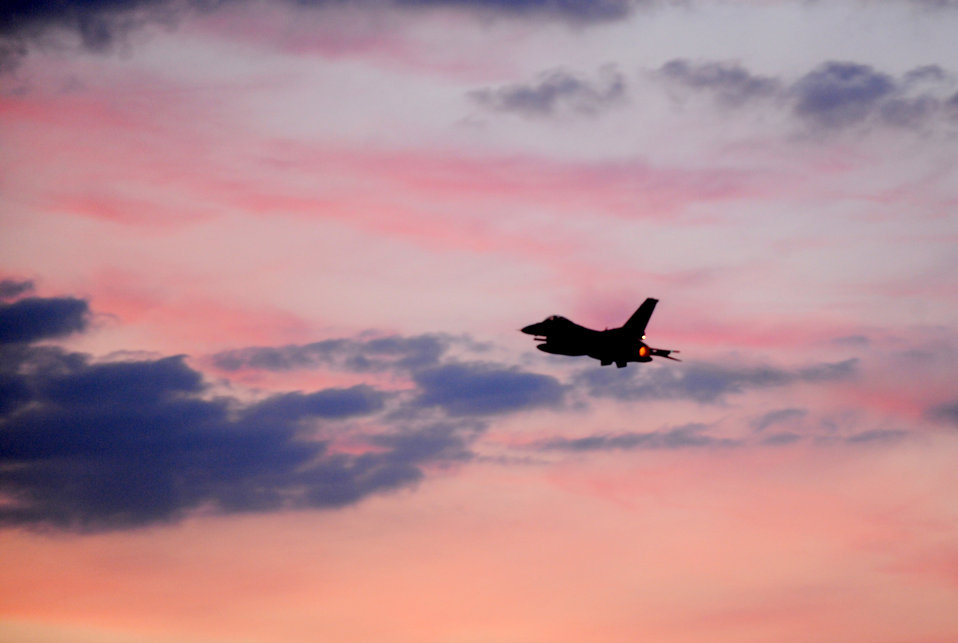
Falcons in Southwest Asia

An F-16 Fighting Falcon pilot from the 480th Fighter Squadron departs May 2, 2011, from Spangdahlem Air Base, Germany, for the unit’s Air Expeditionary Force deployment.